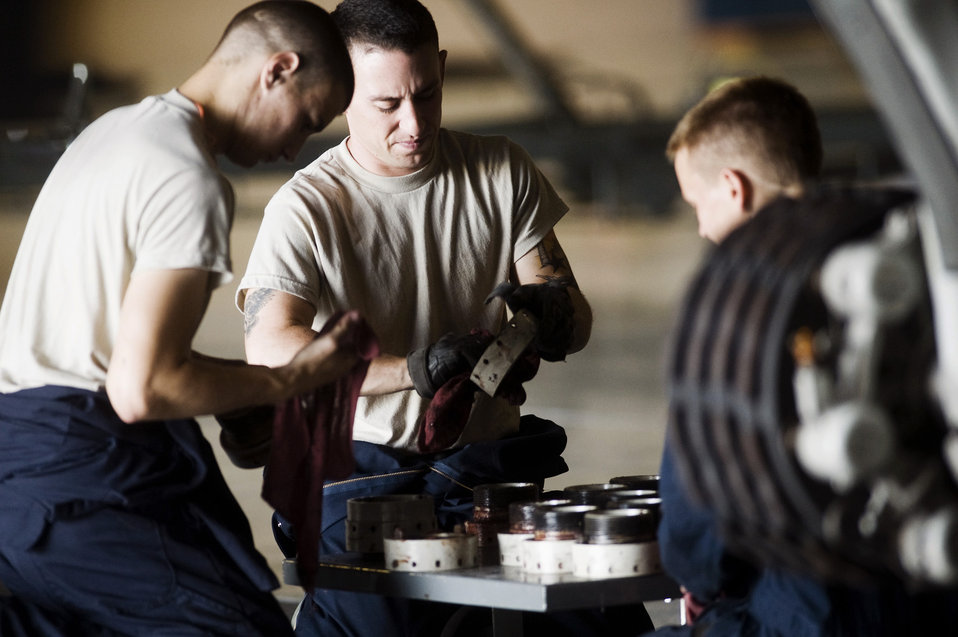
Maintenance Airmen keep C-17 wheels turning

Crew chiefs inspect aircraft parts for installation during a home station inspection of a C-17 Globemaster III at Joint Base Lewis-McChord, Wash., Aug. 5, 2010. The maintainers are aircraft mechanics from 62nd Maintenance Squadron.